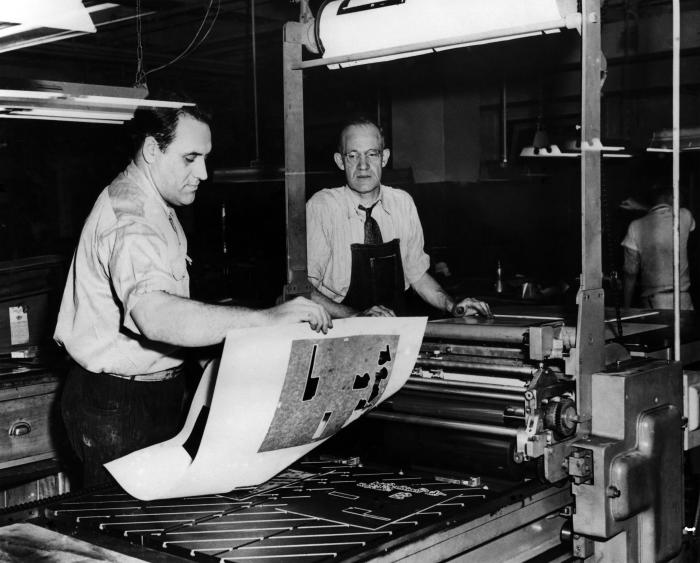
This historic image, provided by the Center for Disease Control's (CDC), National Institute for Occupational Safety and Health (NIOSH), depicted a journeyman photo-engraver preparing to 'frisket' a two-color plate while he was instructing an apprentice engraver. Note that neither man was wearing any protective goggles, gloves, or breathing devices. However, the man at right, was wearing an apron in order to protect his clothes. The image was published in the February, 1947, issue of the 'Industrial Bulletin, New York', Pg. 37. This image, and many others like it, was used to document the many aspects of various industrial activities, so as to better understand these workplace environments, and their associated hazards. In gaining a better understanding of workplace hazards, protocol-formulating bodies such as NIOSH, are better able to create a safer workplace through substantiation of appropriate safety regulations.